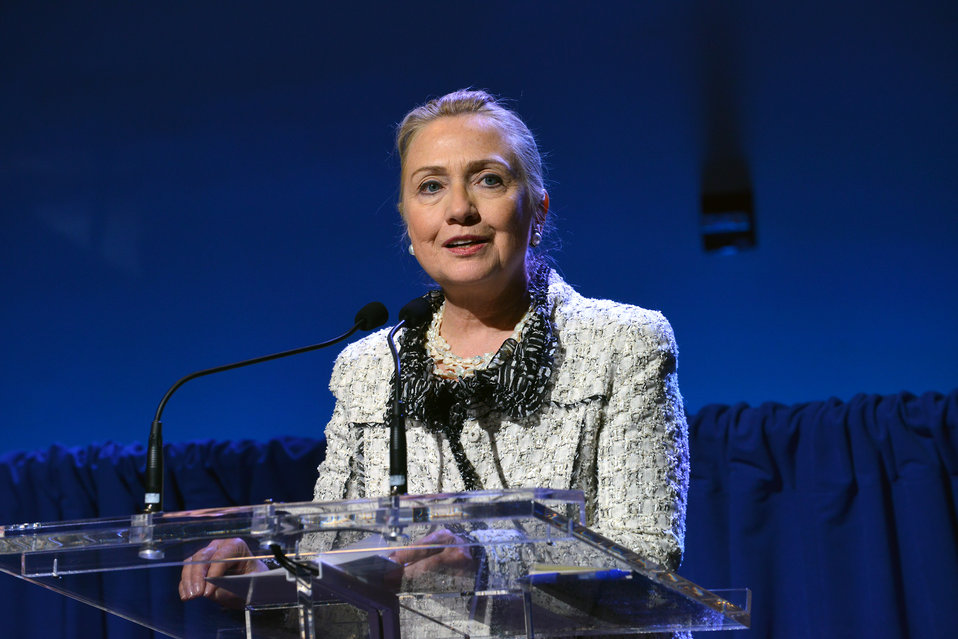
Secretary Clinton Delivers Remarks at the UNAIDS Shared Responsibility Event

U.S. Secretary of State Hillary Rodham Clinton delivers remarks at the UNAIDS Shared Responsibility Event at the United Nations in New York, New York on September 26, 2012.